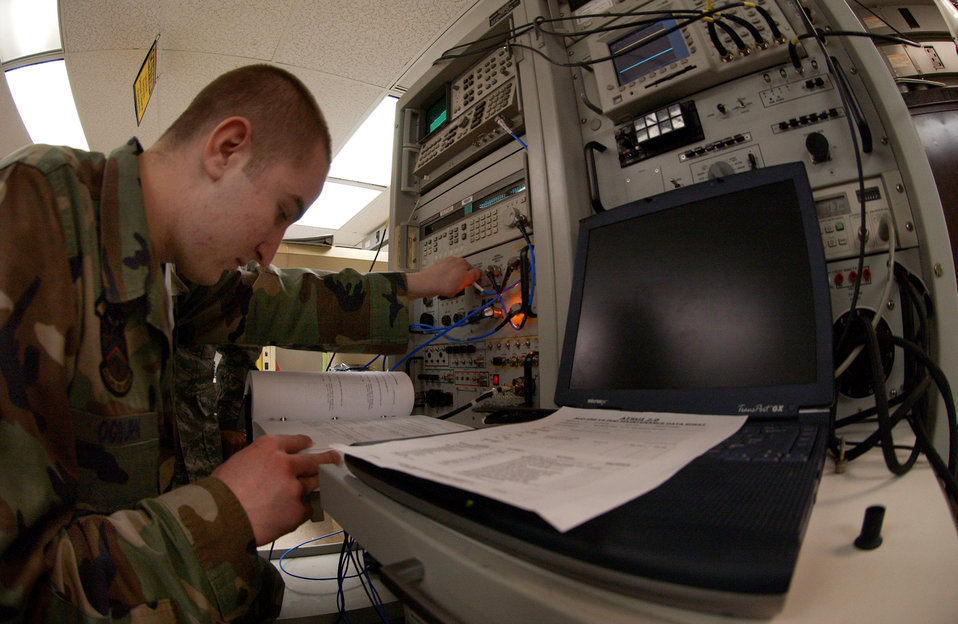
Electronic attack pod increases lethality

Airman 1st Class Timothy Ogburn programs a spectrum analyzer Feb. 27 at Eielson Air Force Base, Alaska. The analyzer helps operate the electronic attack pods maintained by the Avionics Flight. The EA pods provide an offensive electronic attack that degrades an enemy aircraft's radar increasing the lethality of Eielson AFB's aircraft. Airman Ogburn is an electronic warfare journeyman assigned to the 354th Maintenance Squadron.